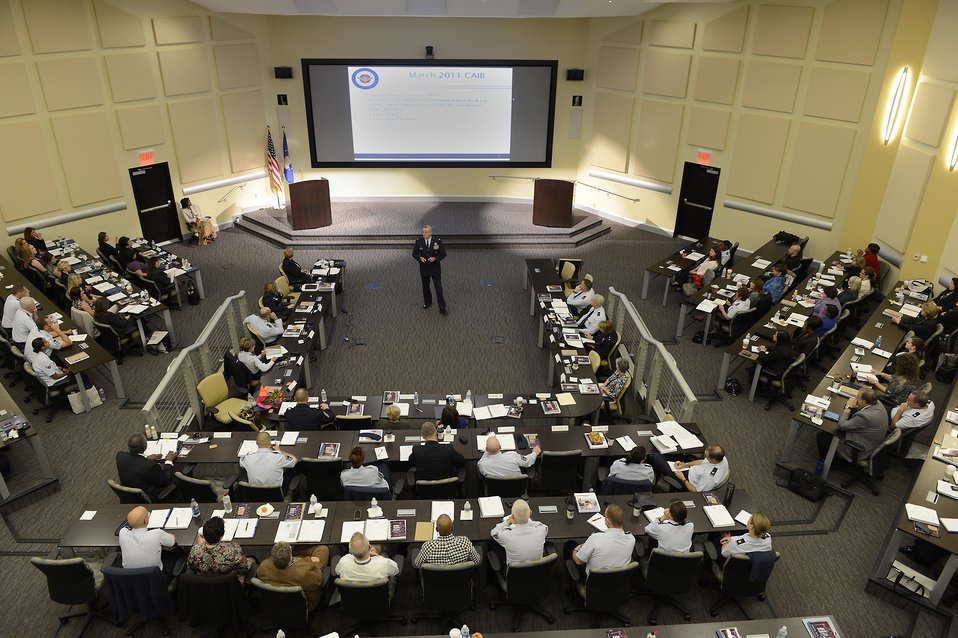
Caring for People

Lt. Col. Gregory Laffitte, with the Air Force Manpower, Personnel and Services directorate, provides Airmen fitness highlights at the Caring for People Forum at Joint Base Andrews, Md., on Sept. 26, 2012. This is the fourth annual forum which provides strategies for commanders, leaders and care professionals to help Airmen and their families.